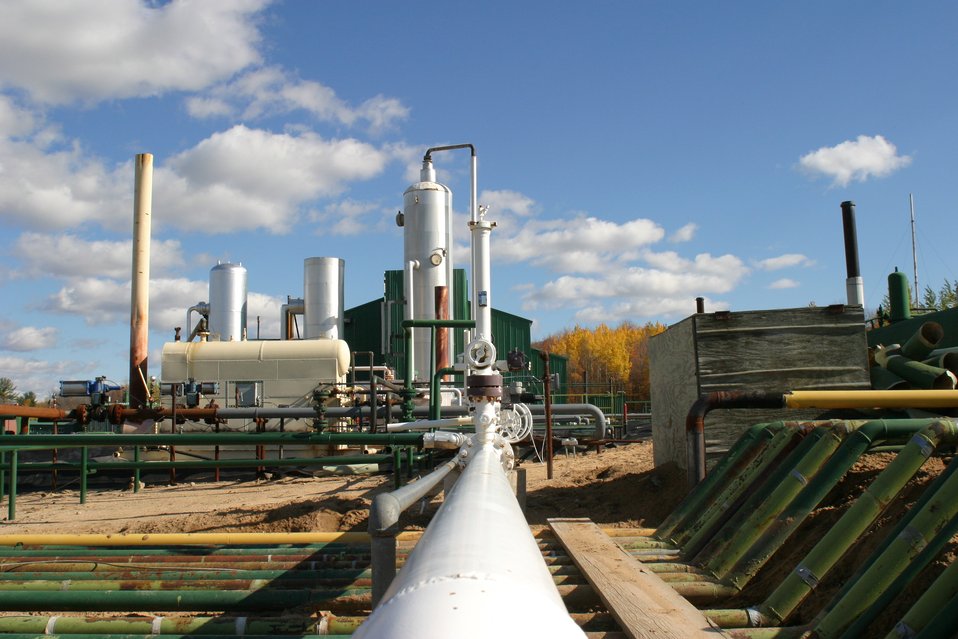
Enhanced oil recovery facility located in Gaylord, Michigan.